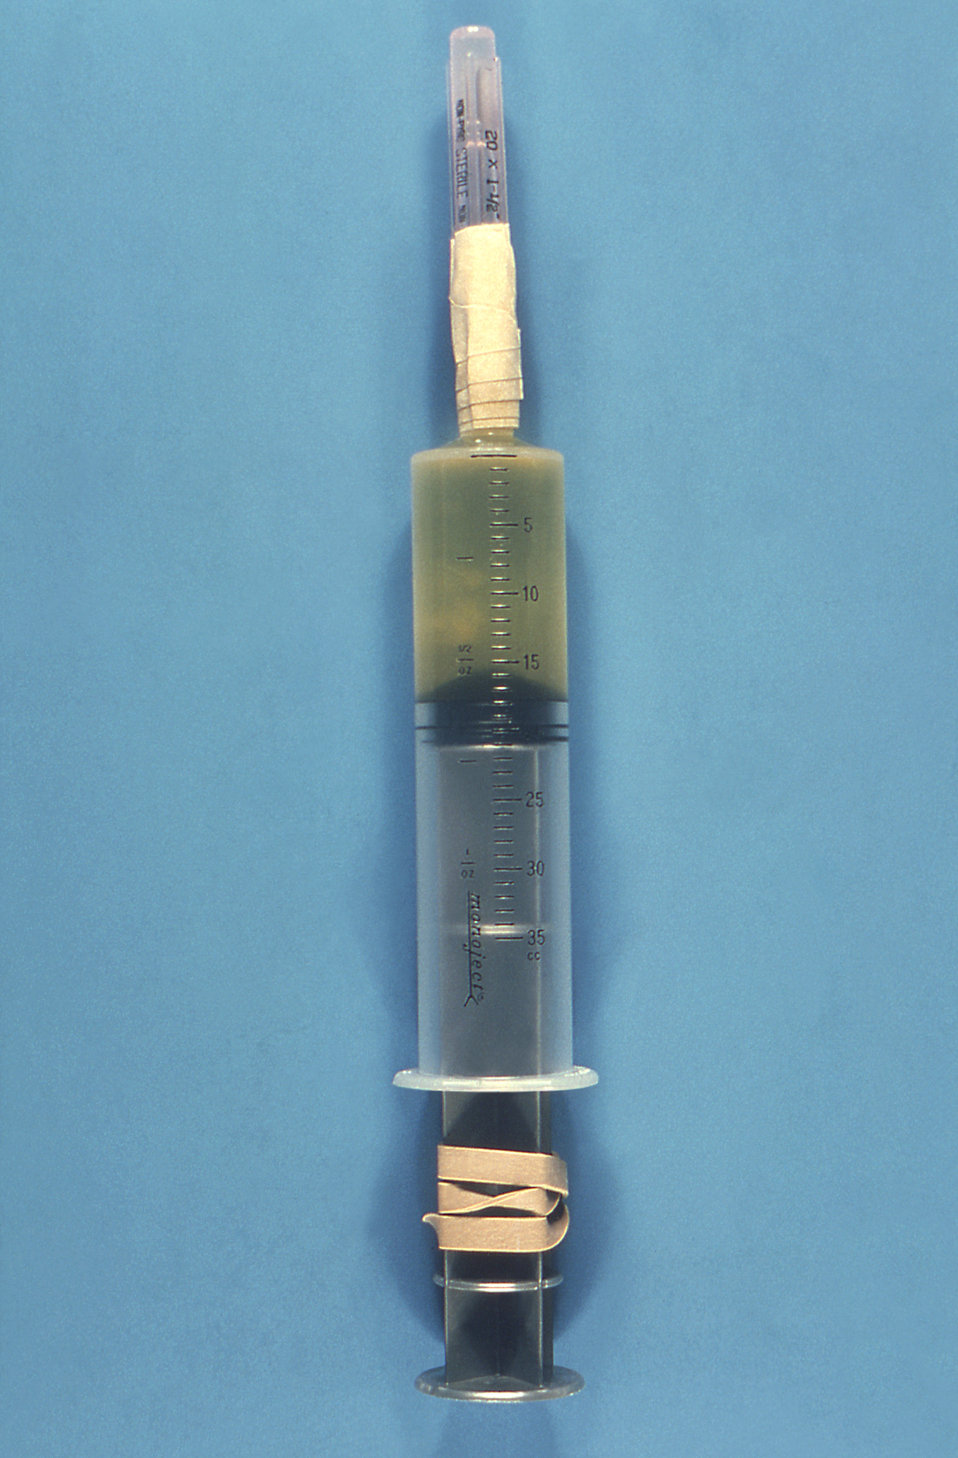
This is a 35ml syringe with a rubber band around the plunger for shipping, containing an amniotic fluid specimen.